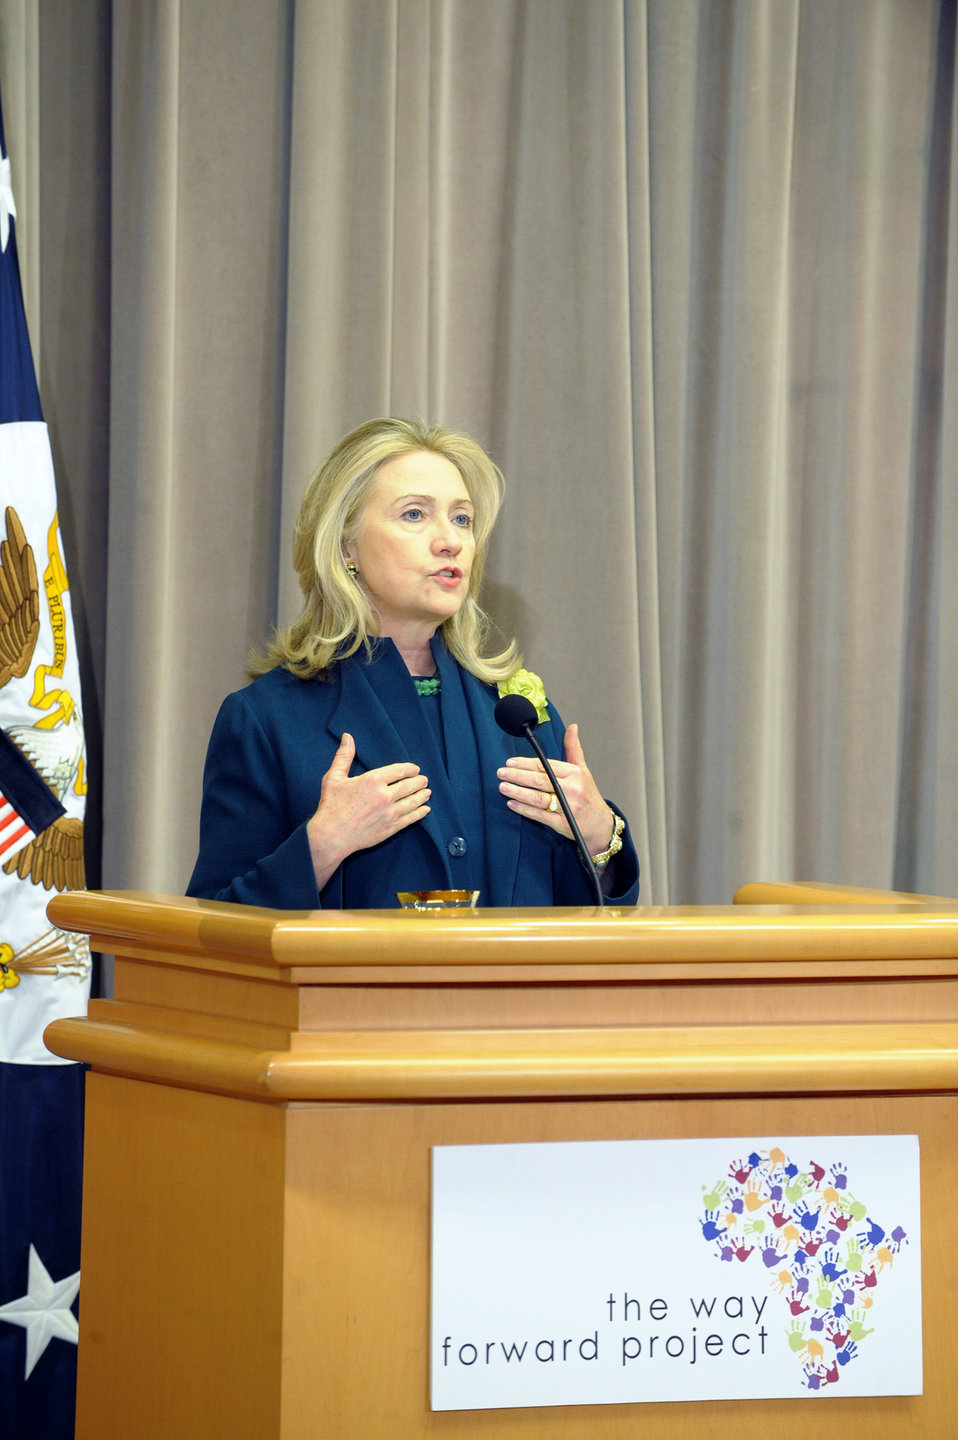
Secretary Clinton Delivers Remarks at Congressional Coalition in Adoption Institute's Africa Way Forward Project Summit

U.S. Secretary of State Hillary Rodham Clinton delivers remarks at the Congressional Coalition in Adoption Institute’s Africa Way Forward Project Summit at the U.S. Department of State in Washington, D.C., on November 8, 2011.